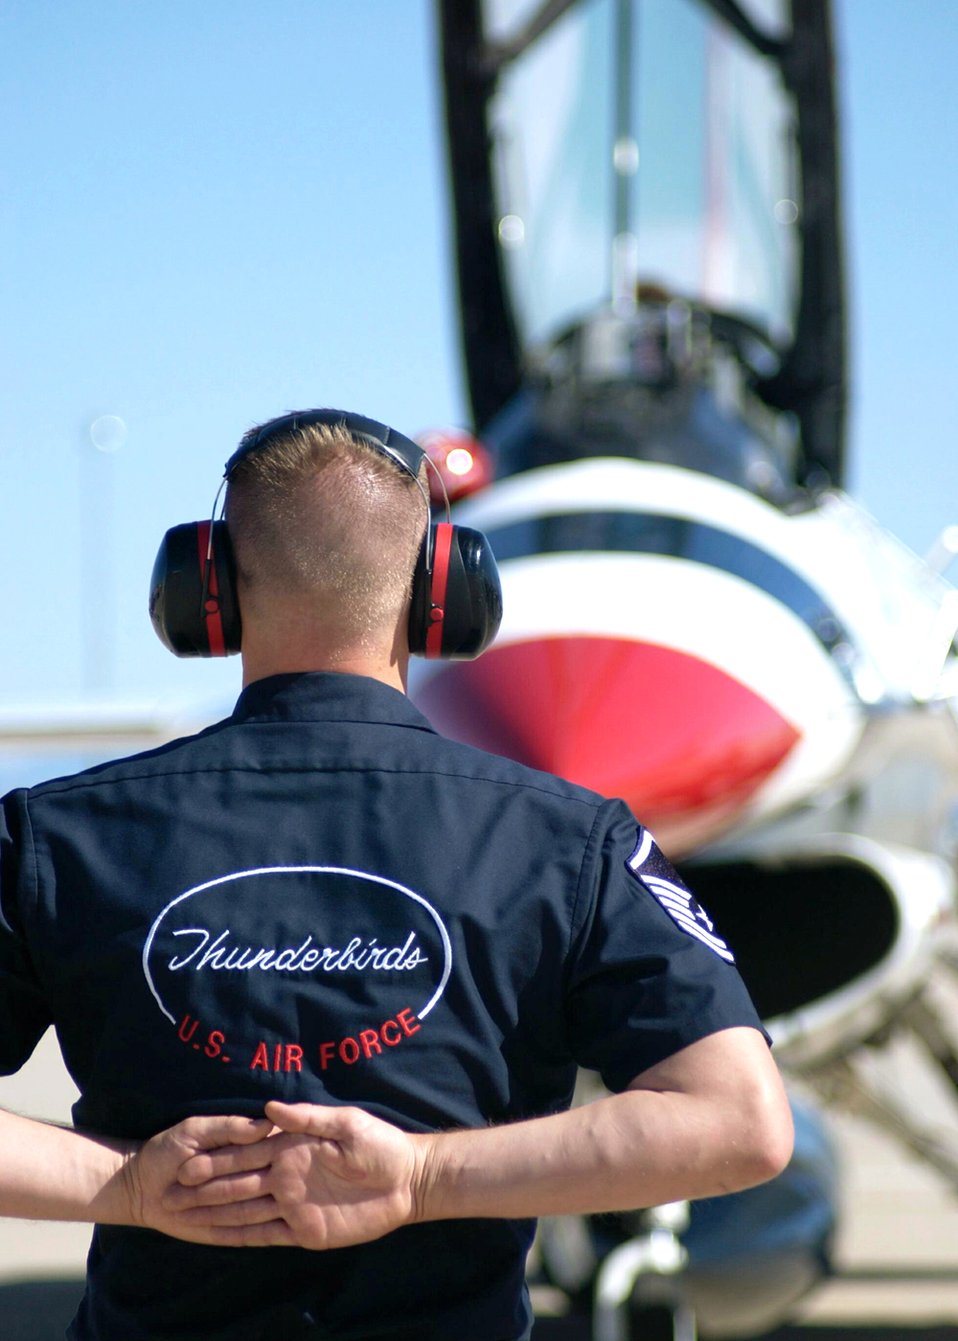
Thunderbirds

DAVIS-MONTHAN AIR FORCE BASE, Ariz. -- Master Sgt. Alan Tolksdorf stands at parade rest as he waits to marshal a Thunderbird F-16 Fighting Falcon before it taxis to the runway here April 2. He is the production superintendent for the Thunderbird's team from Nellis Air Force Base, Nev.